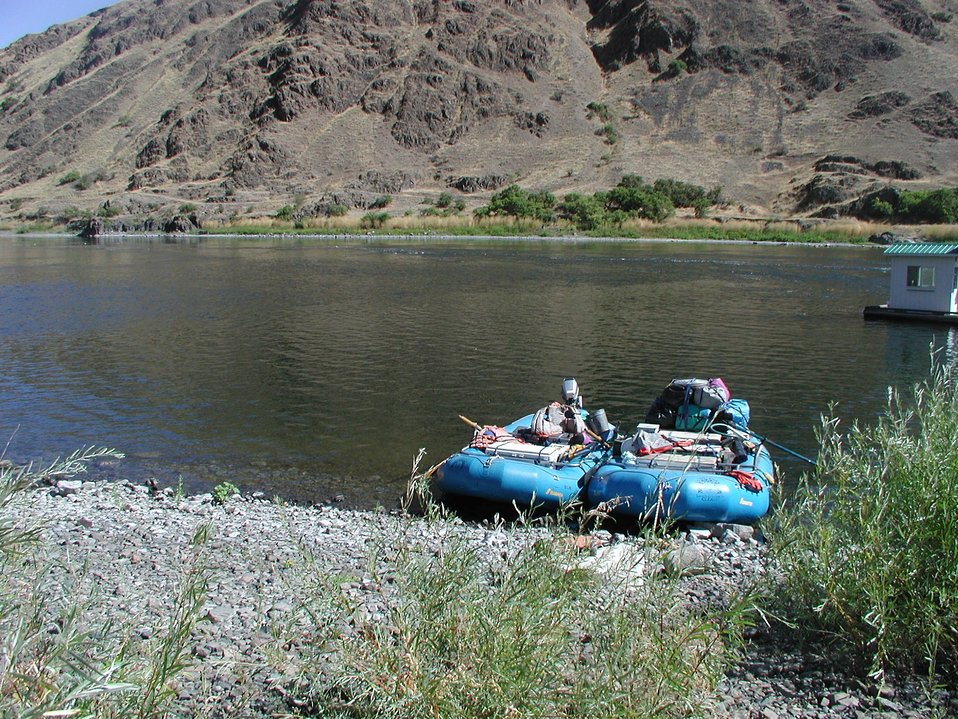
Recreation Rafting on Lower Salmon River Cottonwood Field Office UCSC Upper Columbia Salmon Clearwater District